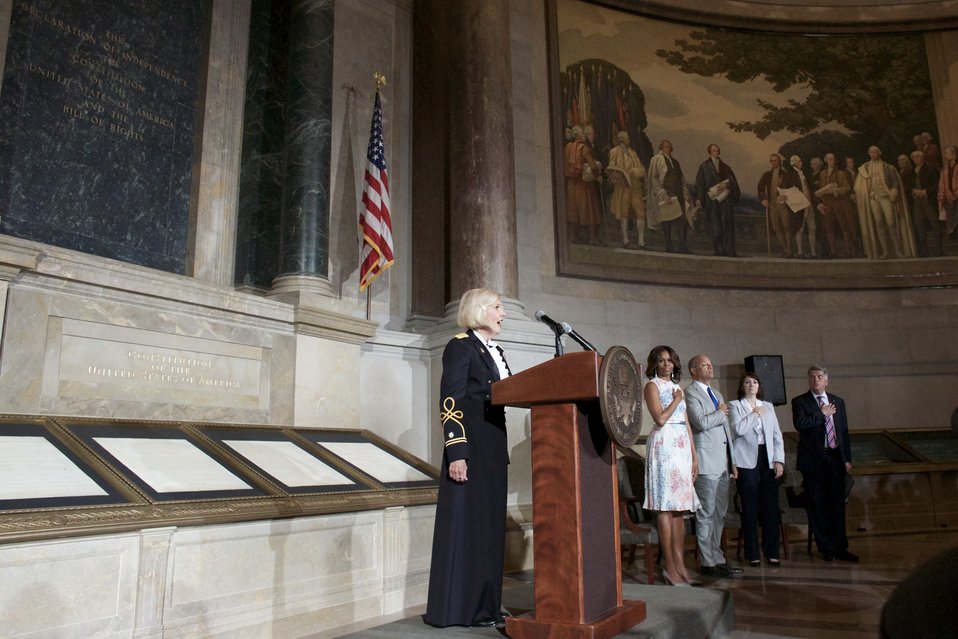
Naturalization Ceremony with Michelle Obama